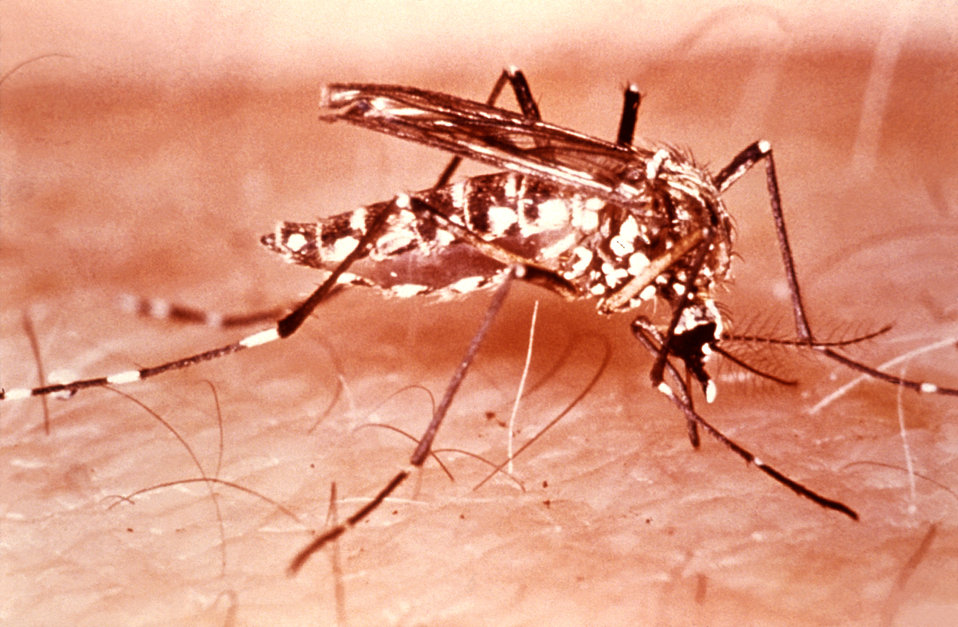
This female Aedes aegypti mosquito is shown here after landing on a human host, as it is about to obtain a blood meal.